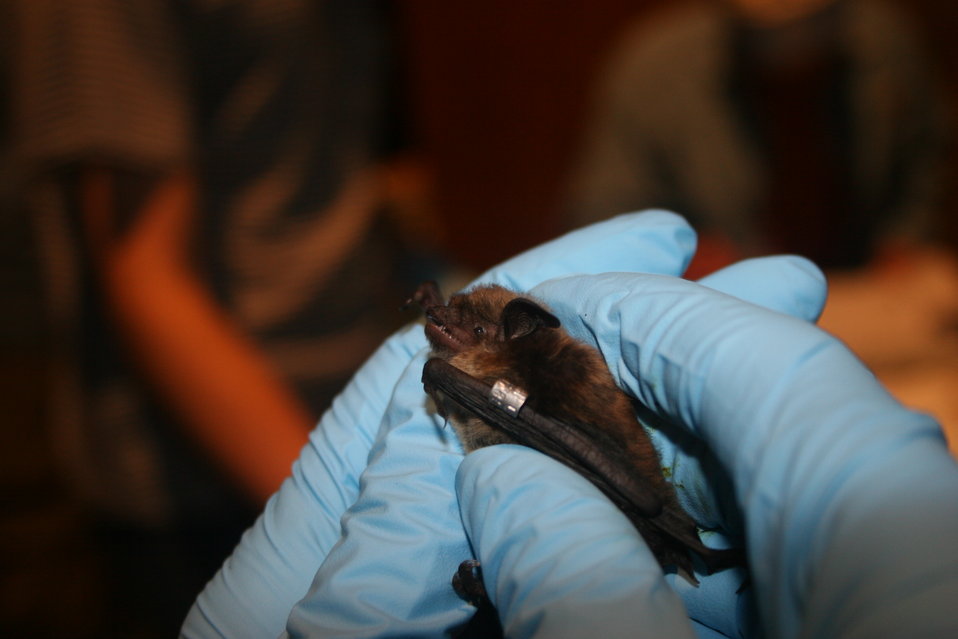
Little brown bat with wing band. The band will help biologists and researchers identify individual bats from year to year.